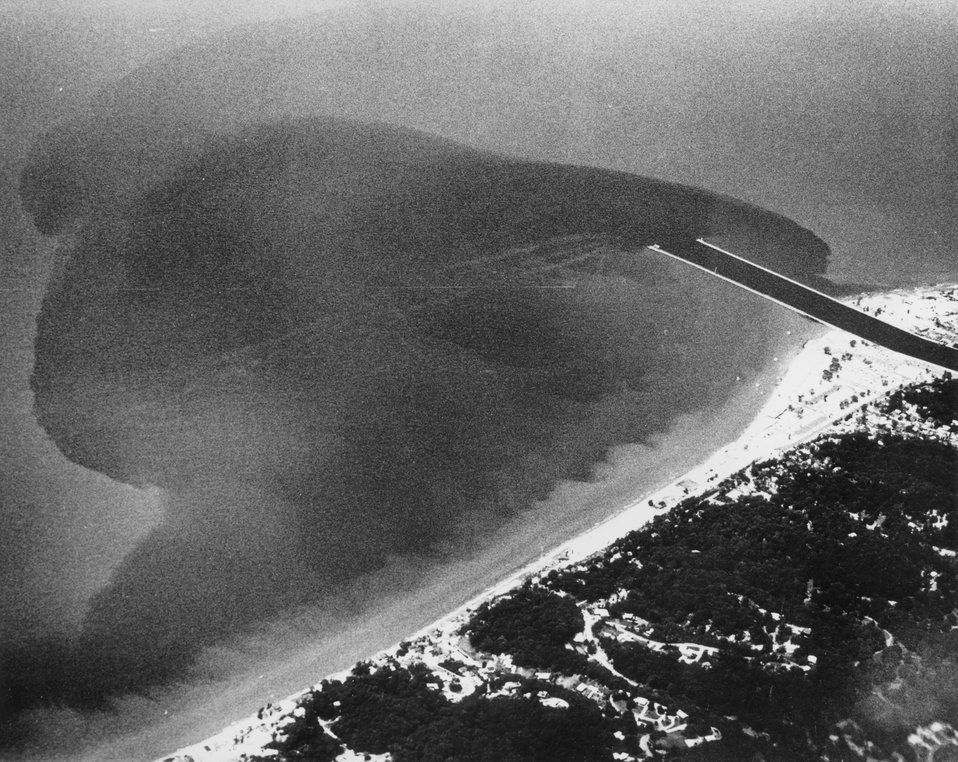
The photo shows the pollution 'plume' of the Grand River as it empties into Lake Michigan at Grand Haven.
c.1972